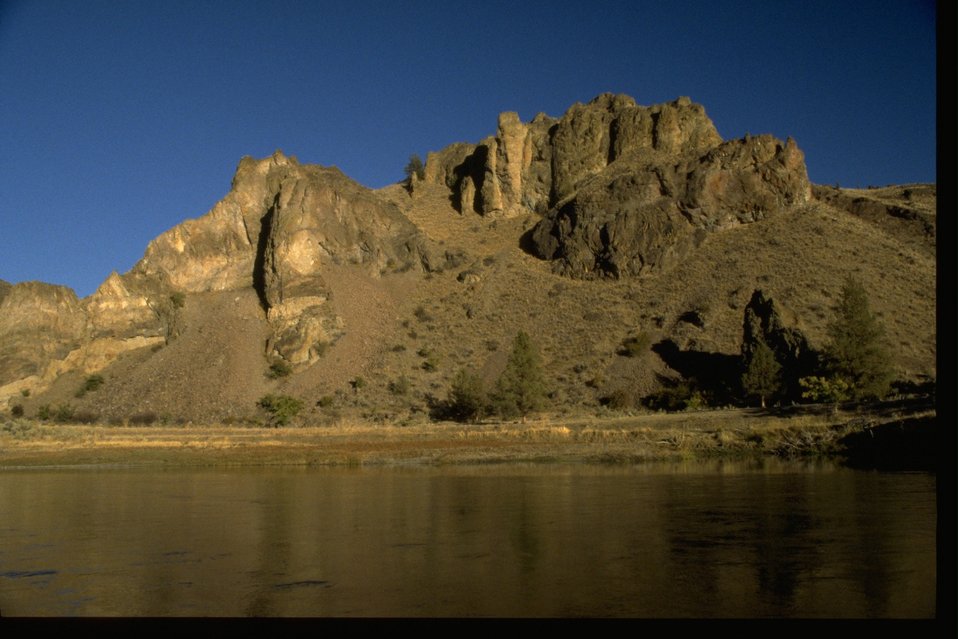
Long shot over the John Day River of a large rock formation.